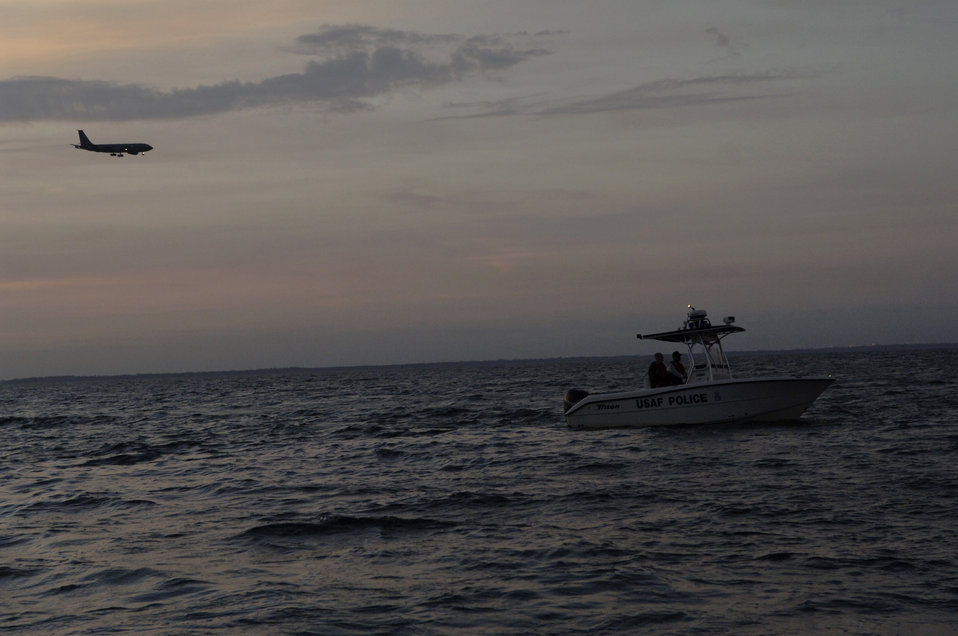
Bay watch

Members from the 6th Security Forces Squadron boat patrol at MacDill Air Force Base, Fla. police Tampa Bay Nov. 27 as a KC-135 Stratotaker prepares to land. The 6th SFS is one of the few security forces squadrons in the Air Force to have a boat patrol and the only one to patrol overnight.